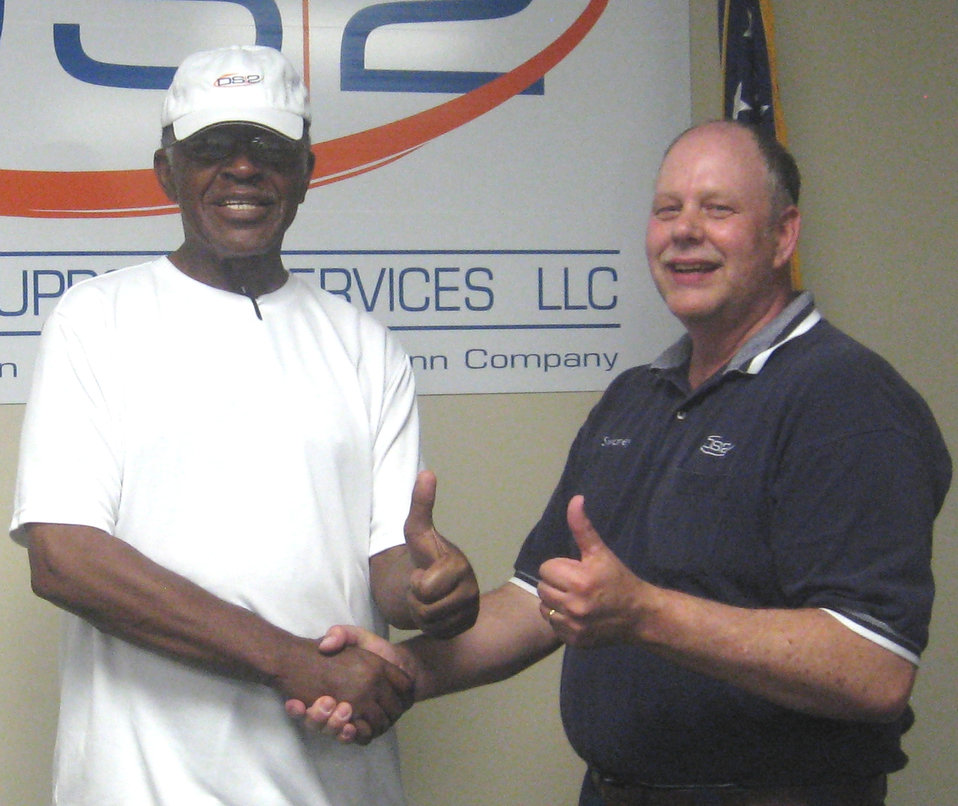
Retiree 'kissed by an angel'

Retired Tech. Sgt. George Smith (left) thanks retired Chief Master Sgt. Air Force Gerald Swanson for saving his life April 28 at Tyndall Air Force Base, Fla. Sergeant Smith blacked out and collapsed at the Tyndall Fitness Center, prompting Chief Swanson to administer CPR. Sergeant Smith is the city commissioner of Callaway, Fla., and Chief Swanson is a training analyst with Defense Support Services, LLC.